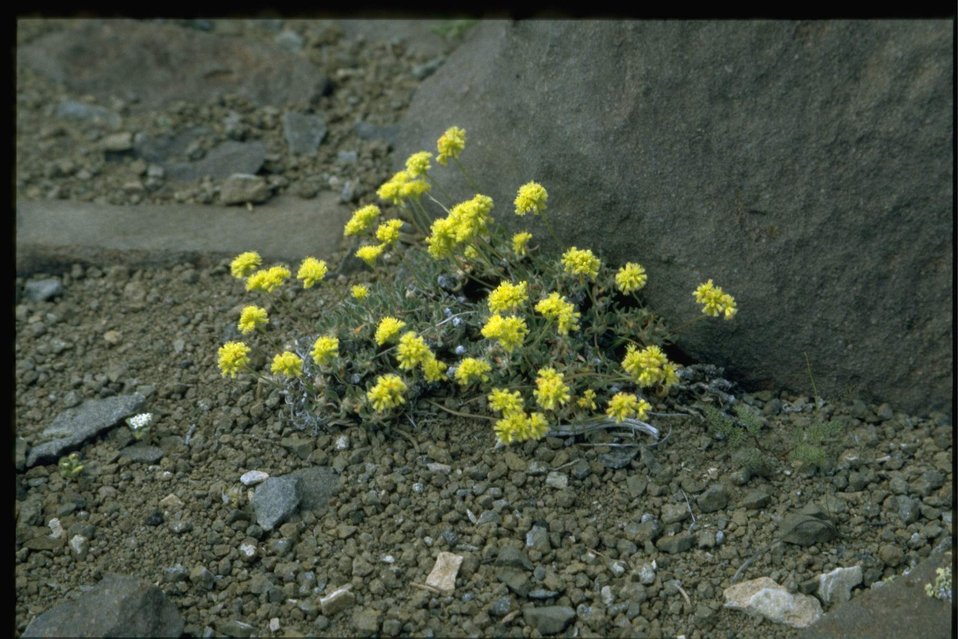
Far shot of arrowleaf balsamroot wildflowers.